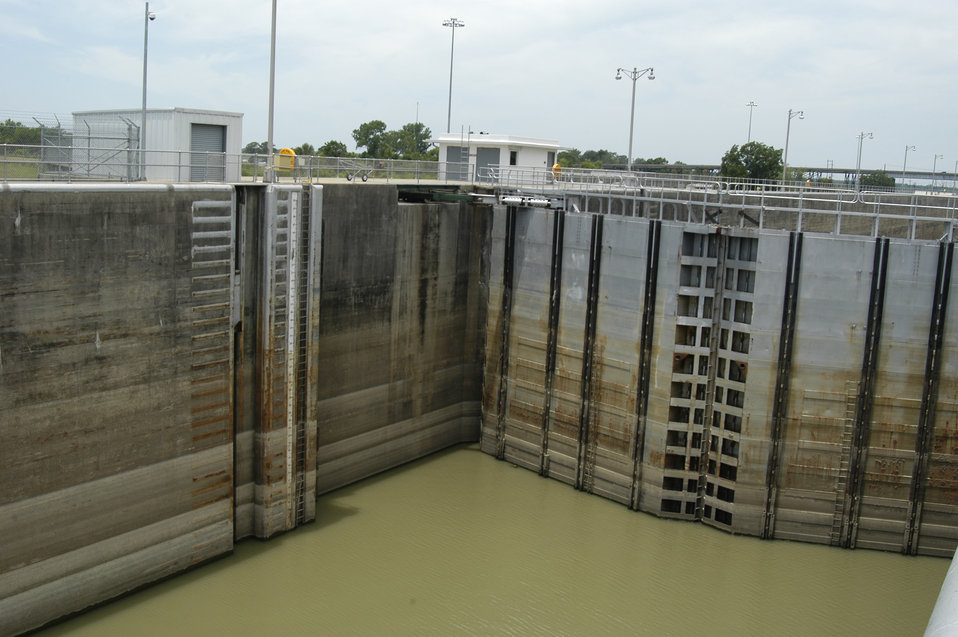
The steel miter gates on the eastern side of the Port Allen Lock are closed. The Port Allen Lock is located on the west bank of the Mississippi River south of the town of Port Allen, LA and opposite the lower limit of the Port of Baton Rouge.